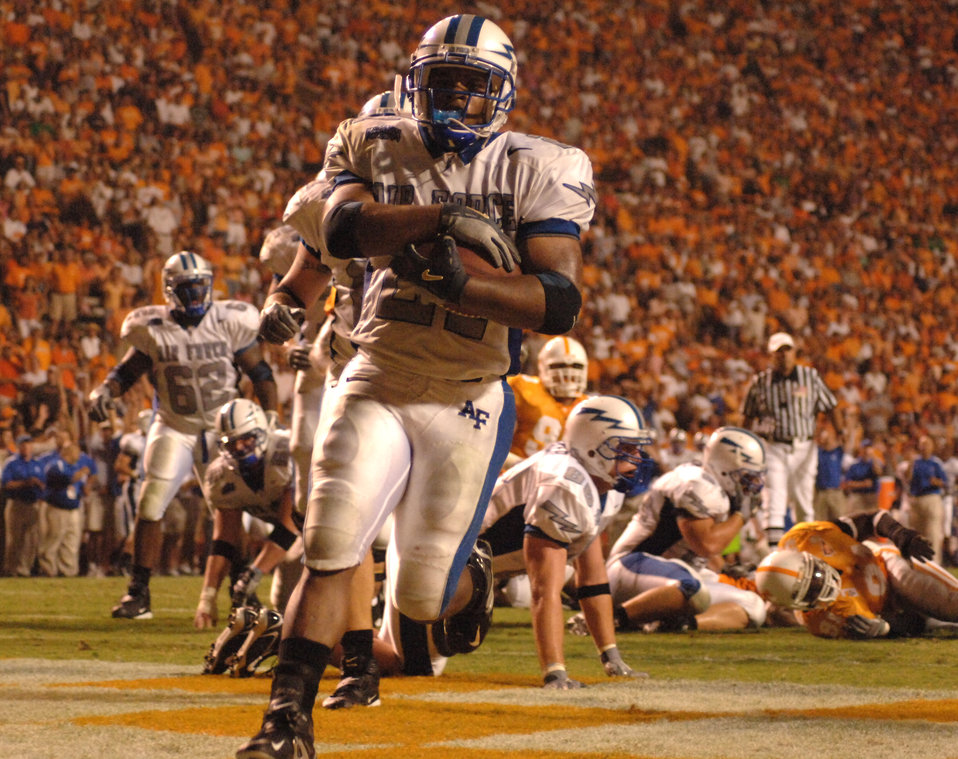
Falcons nearly upset #11 Tennessee in close season opener

Air Force Academy Falcons junior fullback Ryan Williams pulls into the clear to score his second touchdown against #11 Tennessee Sept. 9. Williams ran 16 times for 98 yards, but the Volunteers were able to hold on and edge the Falcons 31-30.